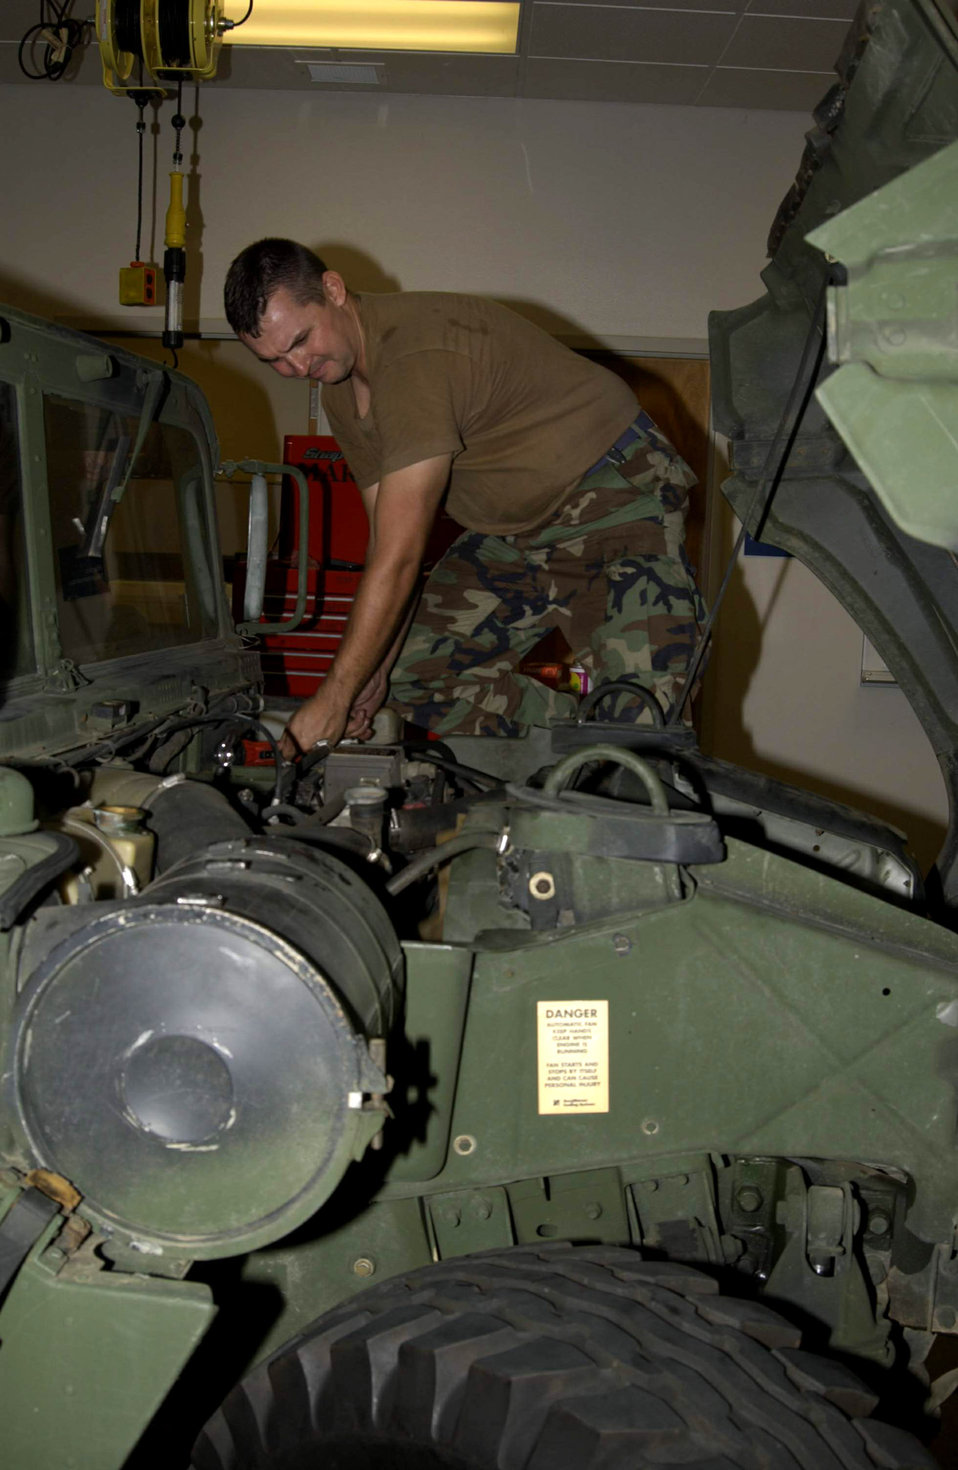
Airmen help on 'front lines' in New Orleans

CAMP BEAUREGARD, La. - Airmen from the 122nd Air Support Operations Squadron here are helping coordinate Hurricane Katrina relief efforts in New Orleans. Staff Sgt. Marco Youngblood is preparing a HUMVEE, equipped with a satellite radio, prior to sending it to New Orleans with tactical air controllers who are assisting various agencies provide help where it is needed. Sergeant Youngblood is a squadron vehicle maintenance technician here.